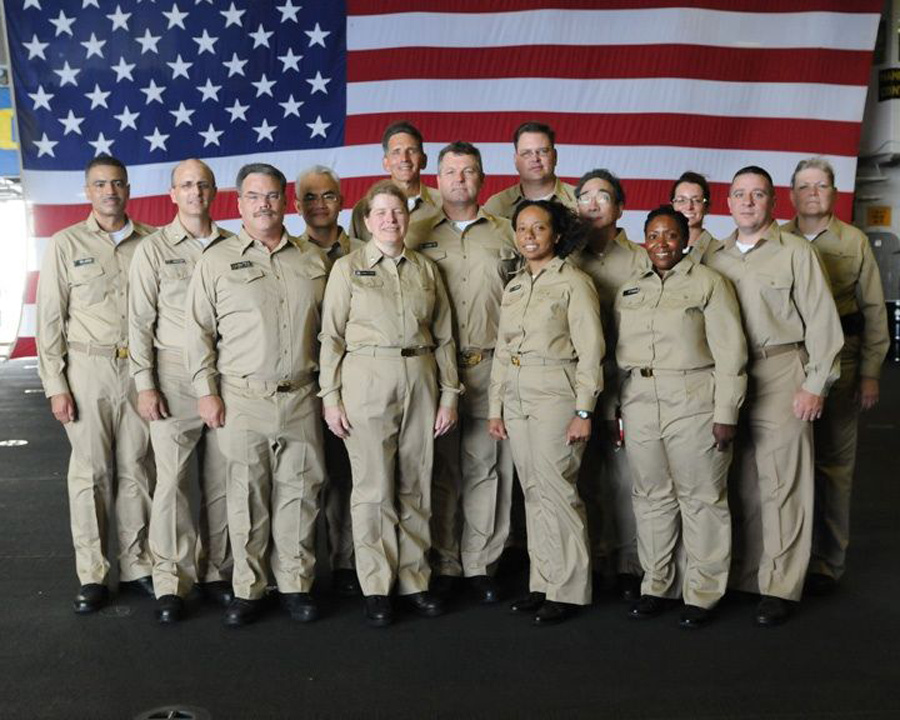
Photographed by a US Navy photographer, this image depicts United States Public Health Service (USPHS) officers who had been brought together as a team deployed on the USS Kearsarge (LHD 3) during Operation Continuing Promise (CP), 2008.